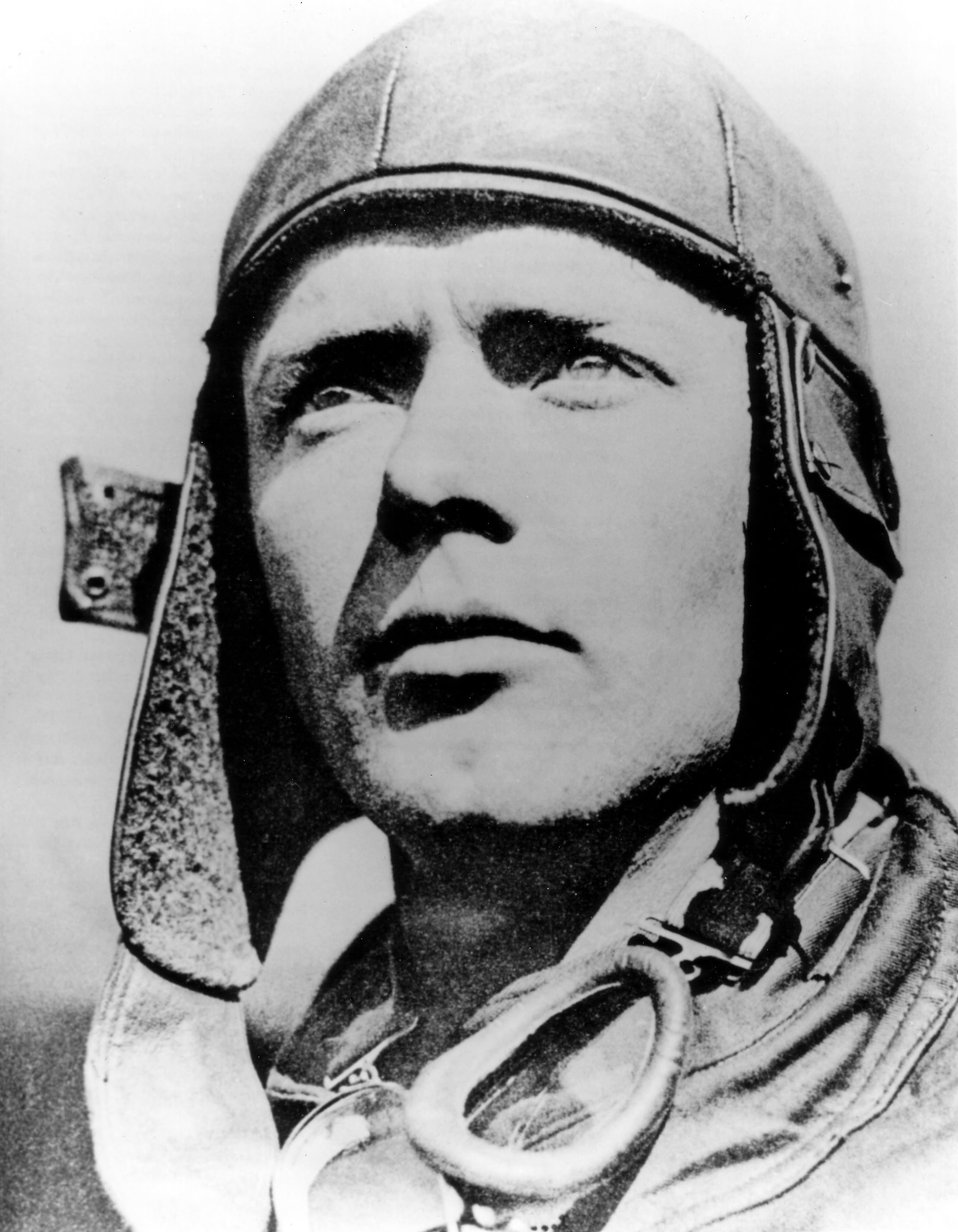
Charles Lindberg

EARLY YEARS -- MAY 21, 1927 -- Charles Augustus Lindberg becomes the first man to fly solo across the Atlantic Ocean. Flying in his